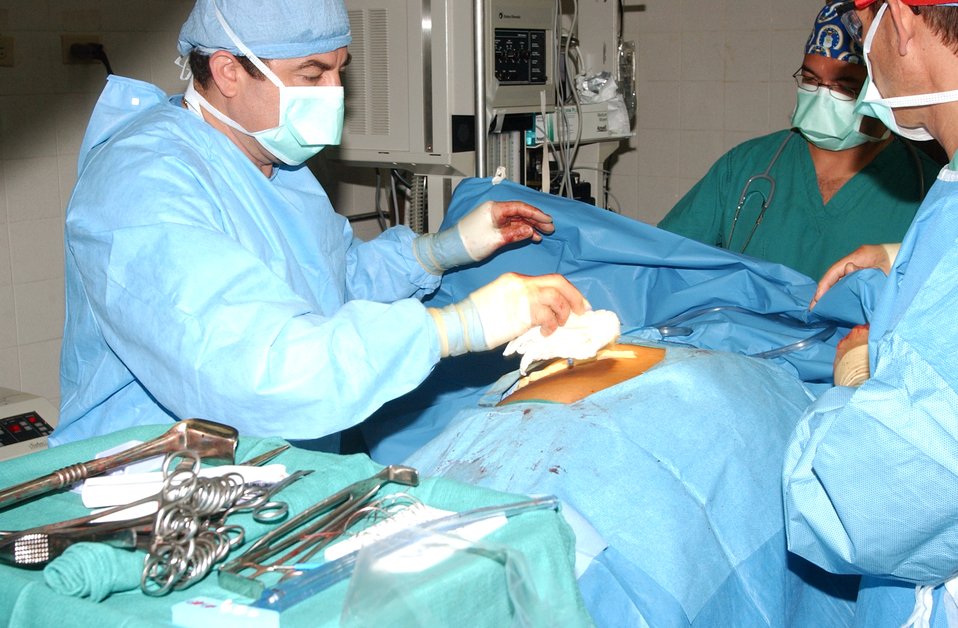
Airmen, Soldiers work with Hondurans to provide medical care

COMAYAGUA, Honduras -- (From left) Dr. Jose Angel Mejia cleans off a patient as Capt. Said Acosta and Army Col. (Dr.) Craig Shriver assist. The group performed surgery on the patient to remove a swollen gallbladder during a medical readiness training exercise here. Dr. Mejia is a Honduran doctor. Captain Acosta and Dr. Shriver are with the Joint Task Force-Bravo's medical element at nearby Soto Cano Air Base.